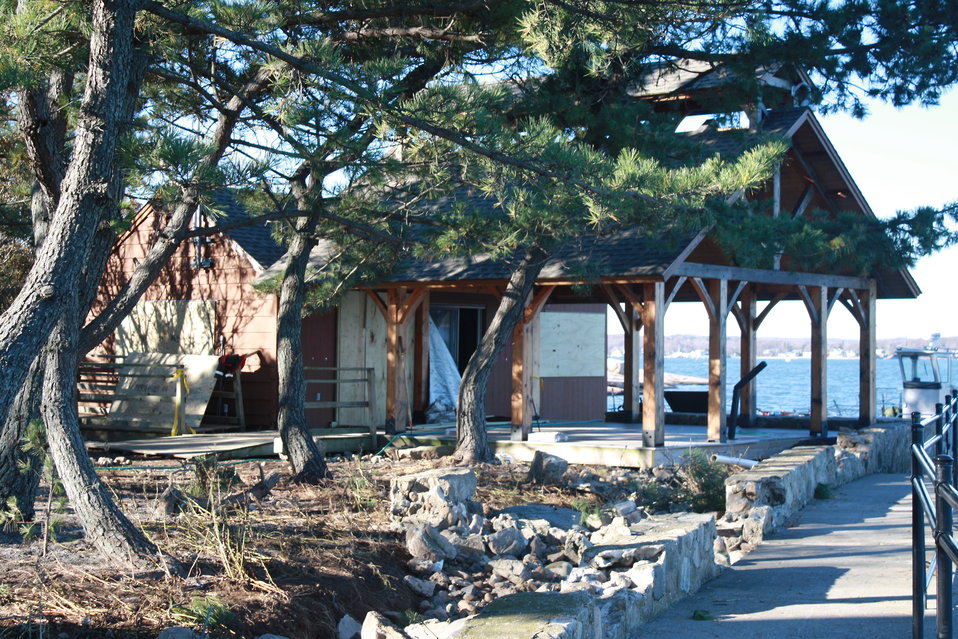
Damage at Stewart B. McKinney National Wildlife Refuge (CT)

There was damage to the environmental education building and outdoor classroom on Outer Island after Hurricane Sandy. Part of the foundation and boardwalk were damaged.